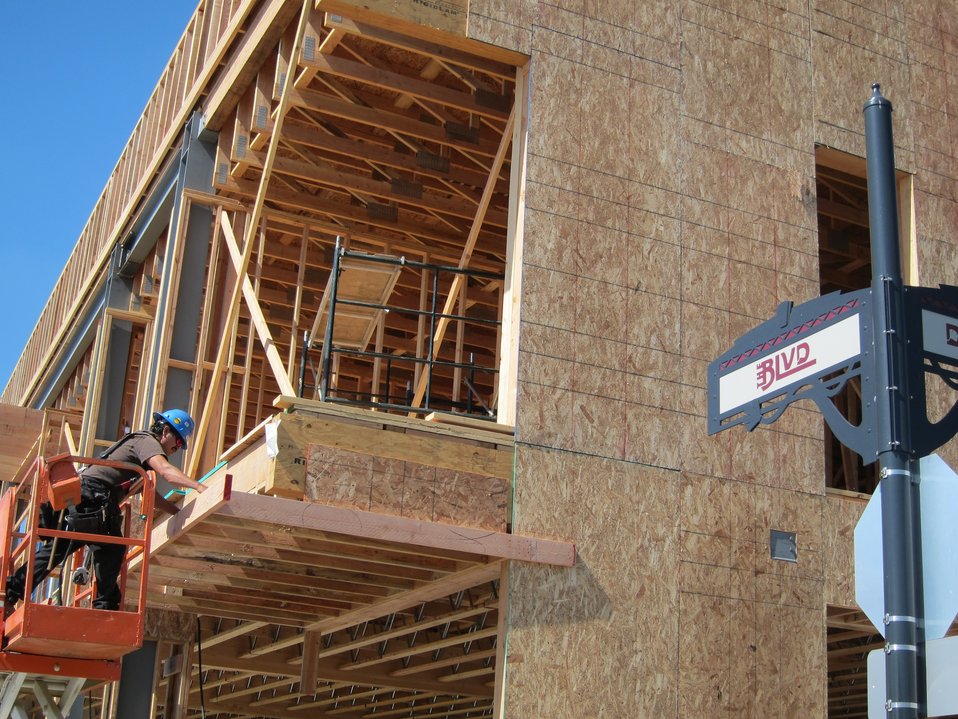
Lancaster California BLVD Construction

The redesign of Lancaster Boulevard in Lancaster, California, won EPA’s 2012 Overall Excellence in Smart Growth Achievement Award. Dubbed “The BLVD Transformation,” the project has had a positive impact on the economy of the Lancaster region, generating more than 1,900 full-time jobs and nearly $300 million in economic activity.